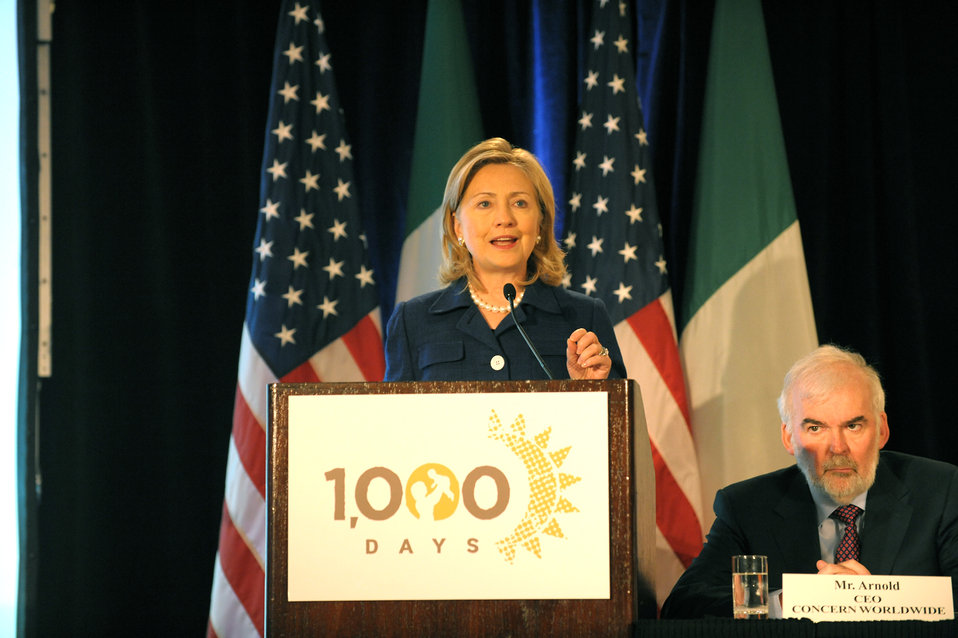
Secretary Clinton Delivers Remarks at the '1,000 Days: Change a Life, Change the Future' Event

U.S. Secretary of State Hillary Rodham Clinton delivers remarks as the co-host of the event on reducing child undernutrition, '1,000 Days: Change a Life: Change the Future,' which she co-hosted with Irish Foreign Minister Micheal Martin at the InterContiental Hotel in New York, New York, on September 21, 2010.